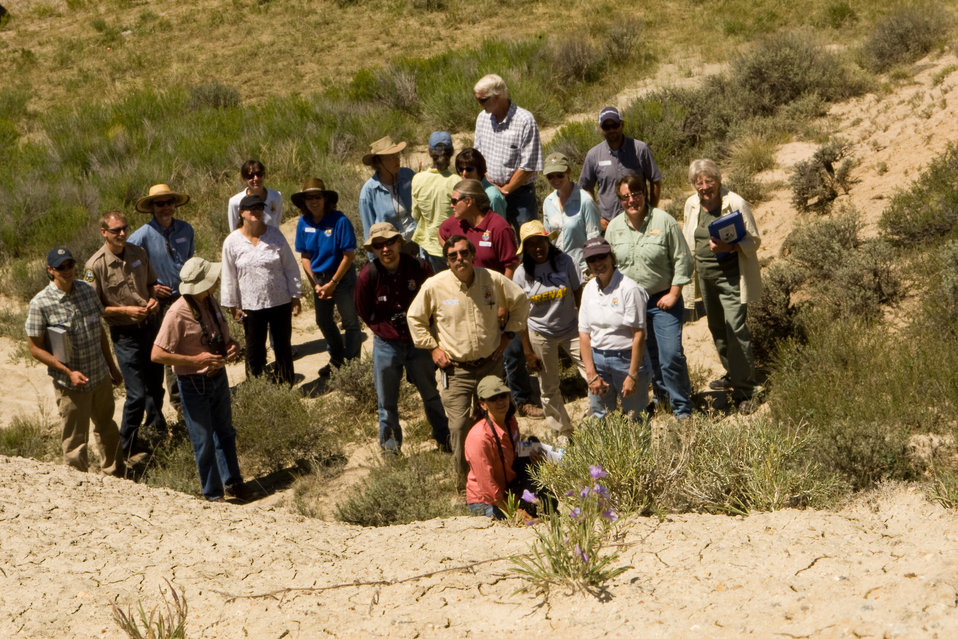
Colorado Rare Plant Conservation Initiative

The Colorado Rare Plant Conservation Initiative (RPCI) is a partnership of 23 statewide and regional agencies, private organizations, and academic institutions working to conserve 121 rare plants in Colorado. As part of these efforts the group developed the Colorado Rare Plant Conservation Strategy, developed Best Management Practices to reduce energy development impacts, addressed climate change, and developed focused strategies for the conservation of individual species at eight priority landscapes. The group has also worked to coordinate volunteer efforts for plant conservation across the state.